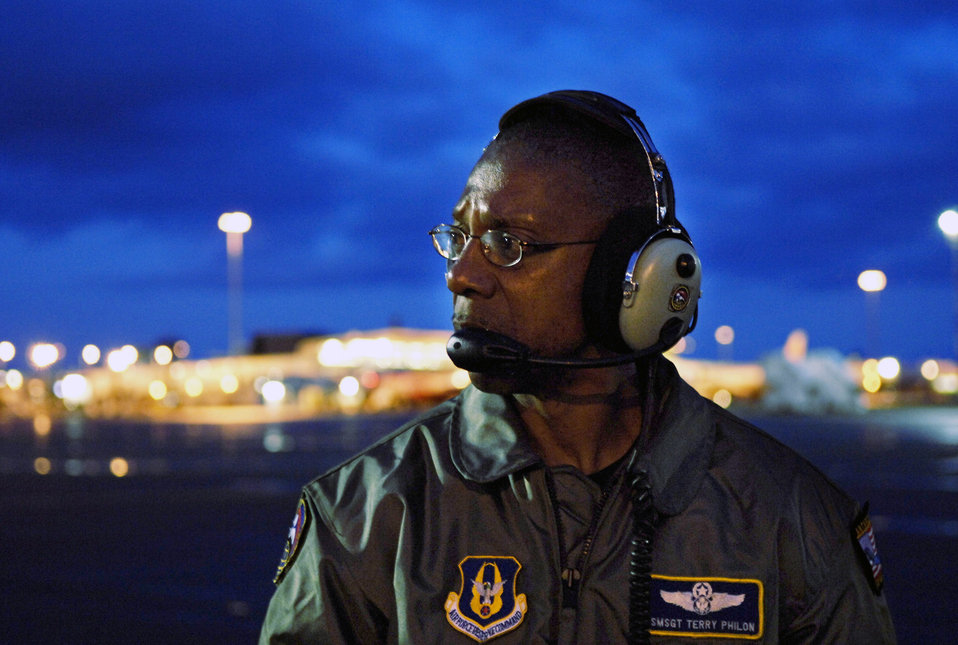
Bound for Antarctica

Senior Master Sgt. Terry Philon conducts preflight checks on a C-17 Globemaster III Aug. 20 at Christchurch, New Zealand. A C-17 and 31 Airmen from McChord Air Force Base, Wash., began the annual winter fly-in augmentation of people, food and equipment for the U.S. Antarctic Program at McMurdo Station.